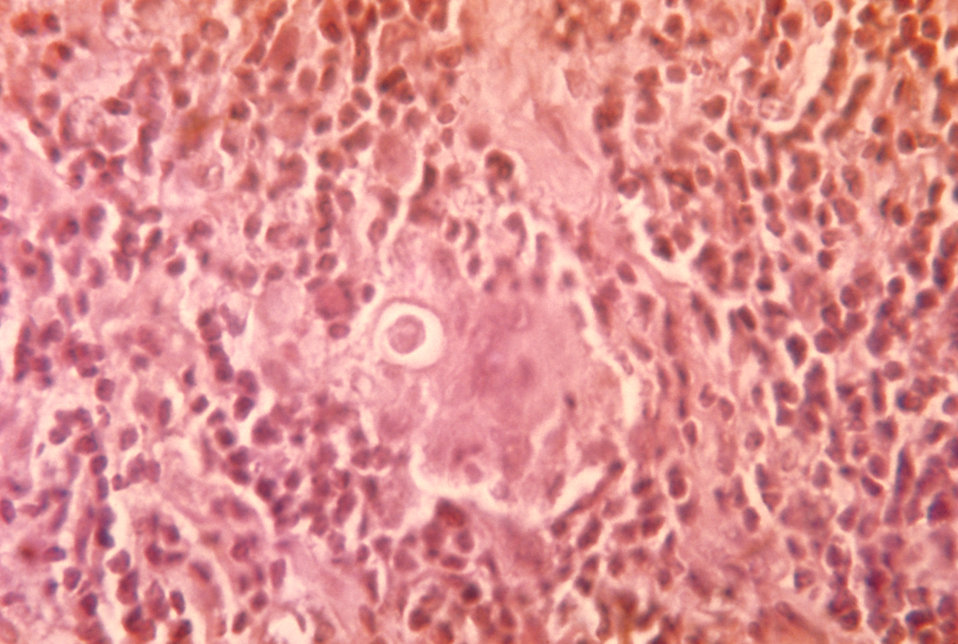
Note the histopathologic changes seen in paracoccidioidomycosis. A P. brasiliensis conidium is visible at center.